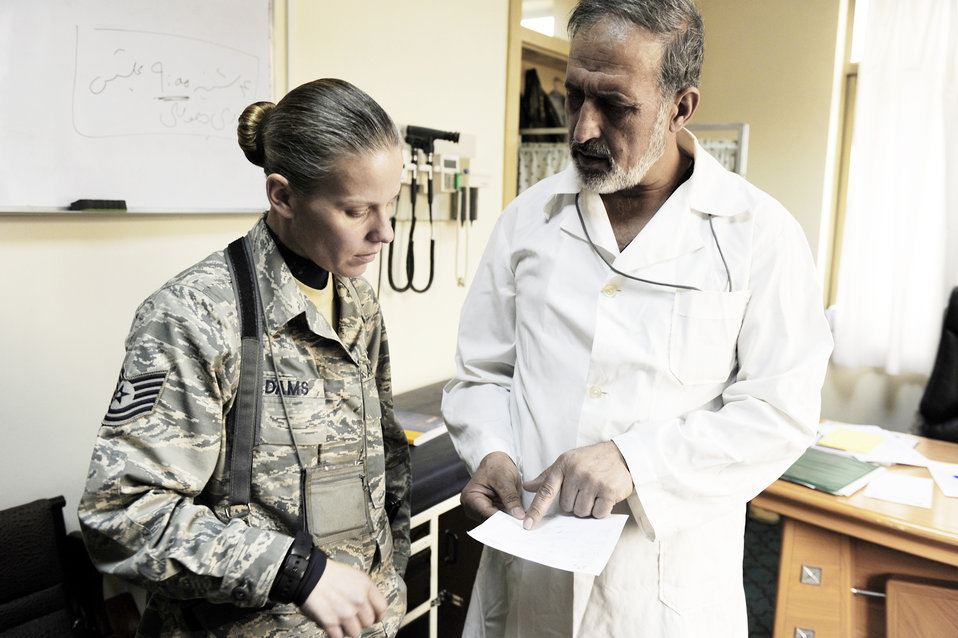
U.S. Air Force medics train fledgling Afghan medical corps

Tech. Sgt. Misti Adams and Afghan National Army Air Corps Col. Toryalay Sh-quraishee discuss a patient's lab results in the Command Air Corp Medical Service Clinic Feb. 23, 2010, at Kabul International Airport, Afghanistan. Sergeant Adams is a 438th Air Expeditionary Advisory Squadron medical adviser and Colonel Sh-quraishee is the Command Air Corps Medical Service Clinic commander.